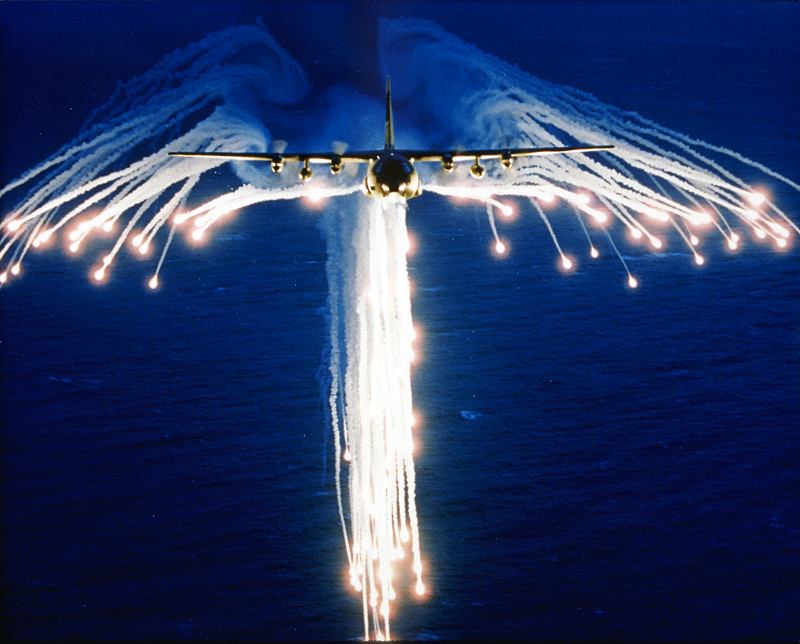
C-130 Hercules 10